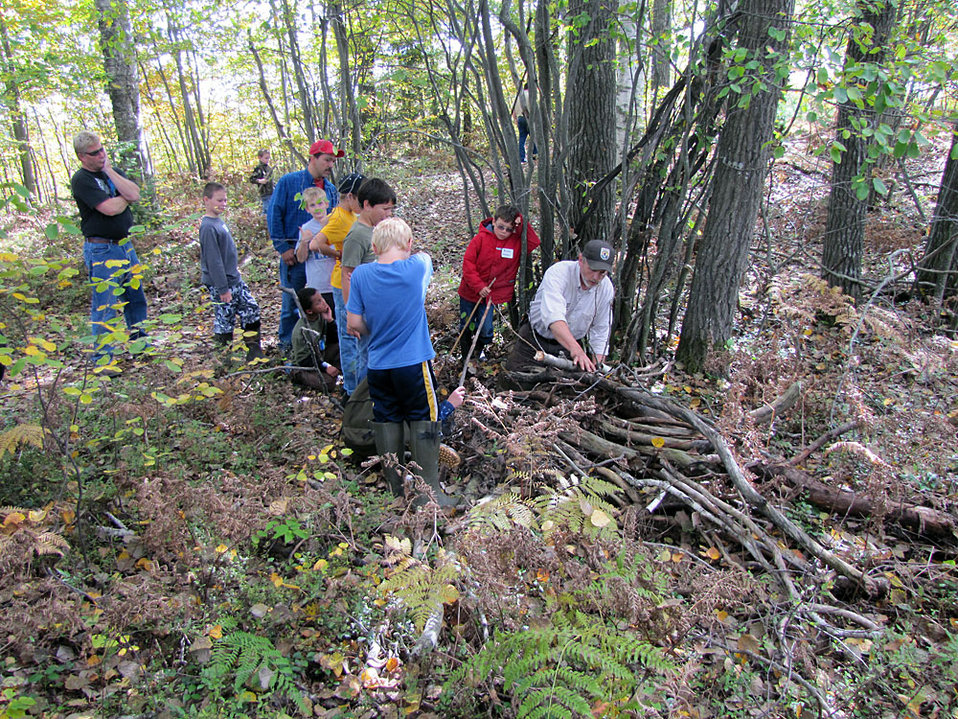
Rich Wilson served in the U.S. Coast Guard from February of 1980 until October of 1982. He performed search and rescue as well as law enforcement primarily on northern Lake Huron and Lake Michigan. Wilson is the Maintenance Mechanic at Seney National Wildife Refuge.